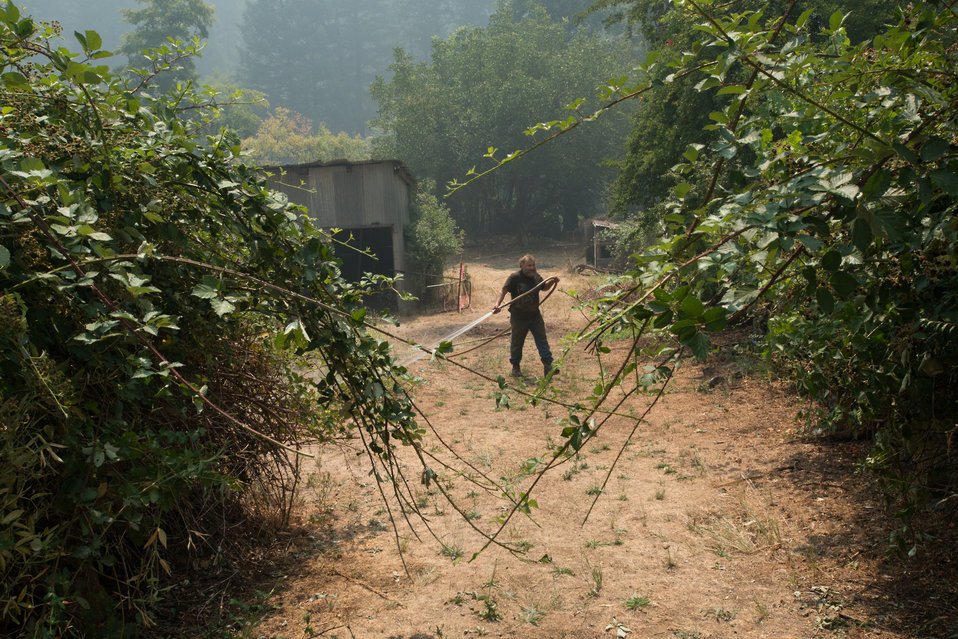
Amid smoke from the Salmon River Complex Fire, in the Klamath National Forest, Dale Crameruses his fire hose, to soak his home, garden and property, in Sawyers Bar, CA in preparation for the possible approach of flames, on Tuesday, Aug. 6, 2013. Wildland/structural firefighters went through the town, assessing fire prevention needs and talking with each available resident about fire prevention measures they are doing on their own as well as other measures they could take to prepare for fire. Actions such as moving away firewood, cutting and clearing plants next to their structures, and using garden hoses to soak structures and grounds all help in the event the main fire comes into their town.
There are two types structure environments in the realm of wildland firefighting.
This urban intermix structural protection environment is generally the more challenging, where structures have been built within a wildland area, isolated to some degree from other structures, but with no separation from wildland fuels (trees, brush and grass). This requires each structure to be assessed on a case-by-case basis. Fire protection measures will be tailored to each situation; defending these structures require a more complex solution, more firefighters, equipment and resources per structure.